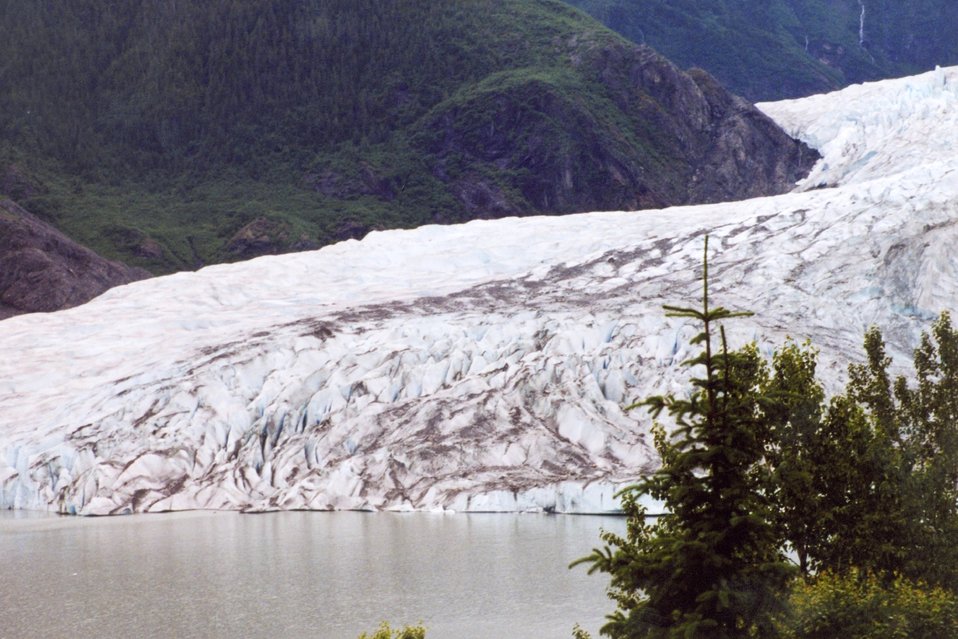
Mendenhall Glacier